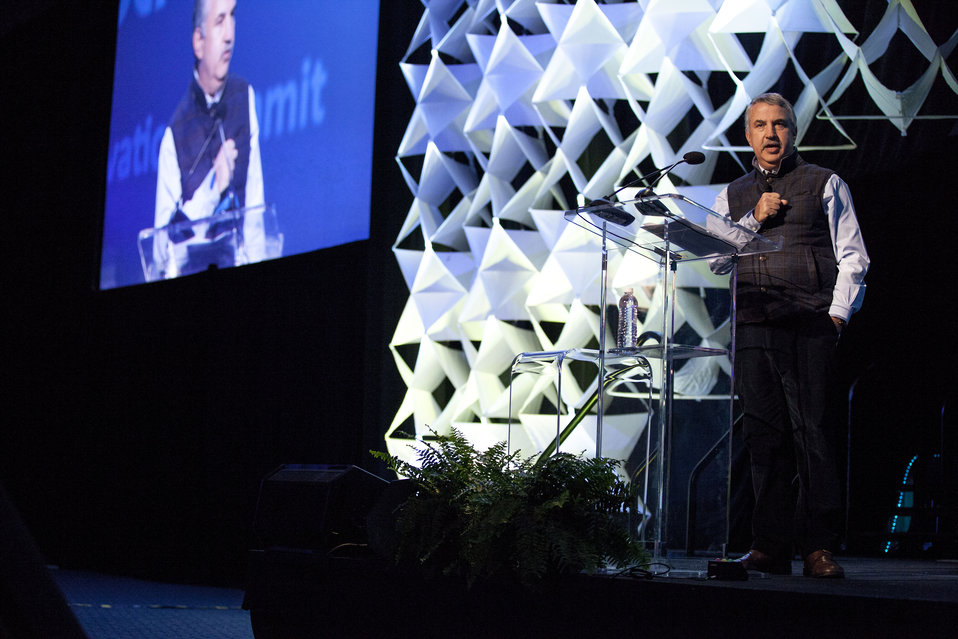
On Tuesday morning, Pulitzer Prize-winning author Thomas Friedman delivered a keynote speech, touching on globalization, IT and the shifts in energy innovation that have taken place in the last 10 years.